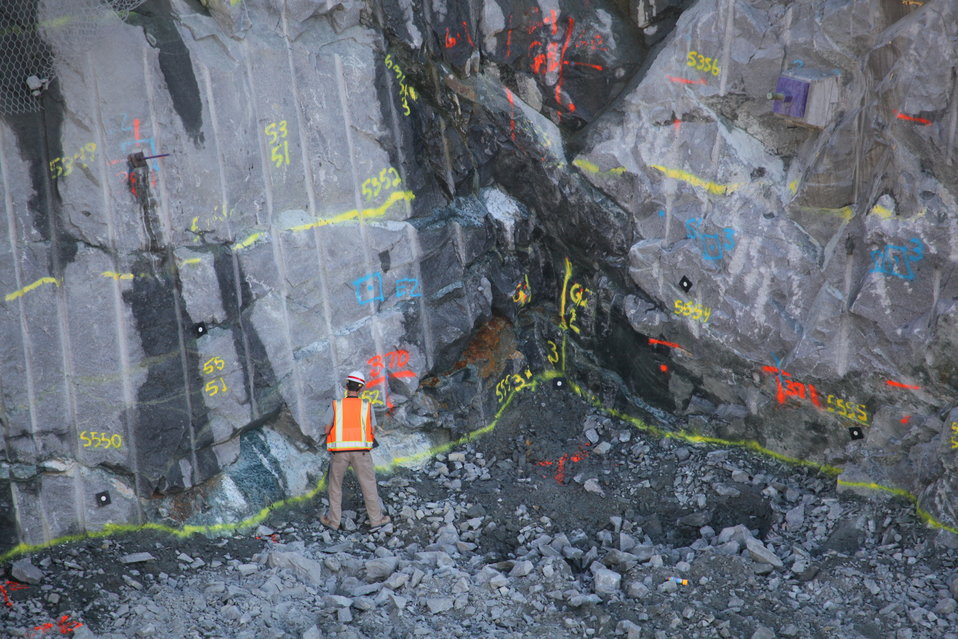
Geology at the Folsom auxiliary spillway

Geologist Kim Jorgensen of the U.S. Army Corps of Engineers Sacramento District maps the rock walls of the new Folsom Dam auxiliary spillway for the best spots to place reinforcements in Folsom, Calif., Feb. 17, 2012. Certain points in the rock walls are naturally weaker and are strengthened by adding large bolts. . The spillway is scheduled to be ready for use in 2017 and will allow Folsom Dam to release water sooner and more safely, helping reduce flood risk for the Sacramento region.